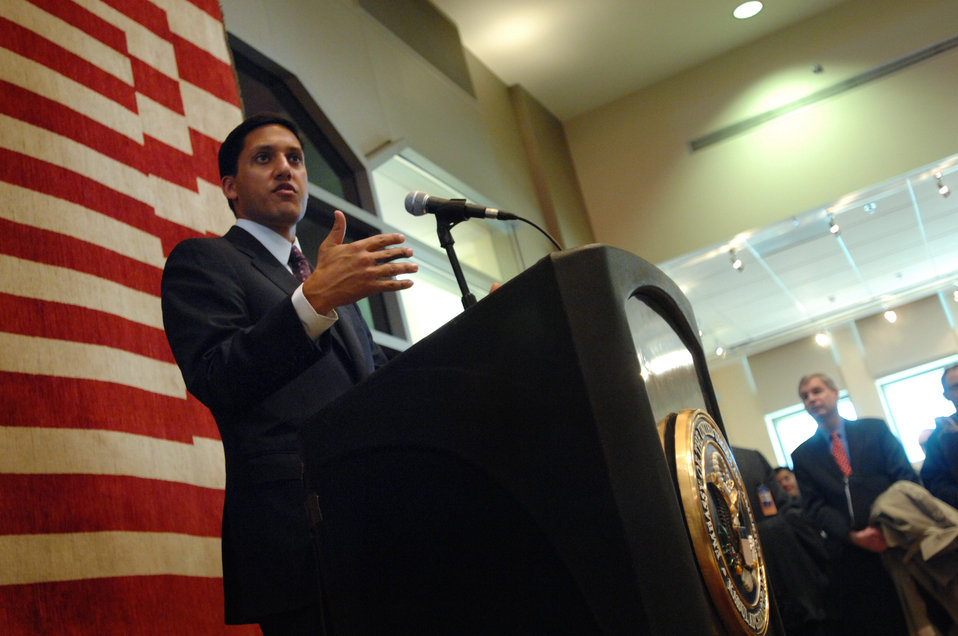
110208sv Shah073

Dr. Rajiv Shah, Administrator of the United States Agency for International Development (USAID), holds a town hall meeting at the U.S. Embassy in Kabul, Afghanistan on Tuesday, February 8, 2011. (S.K. Vemmer/Department of State)